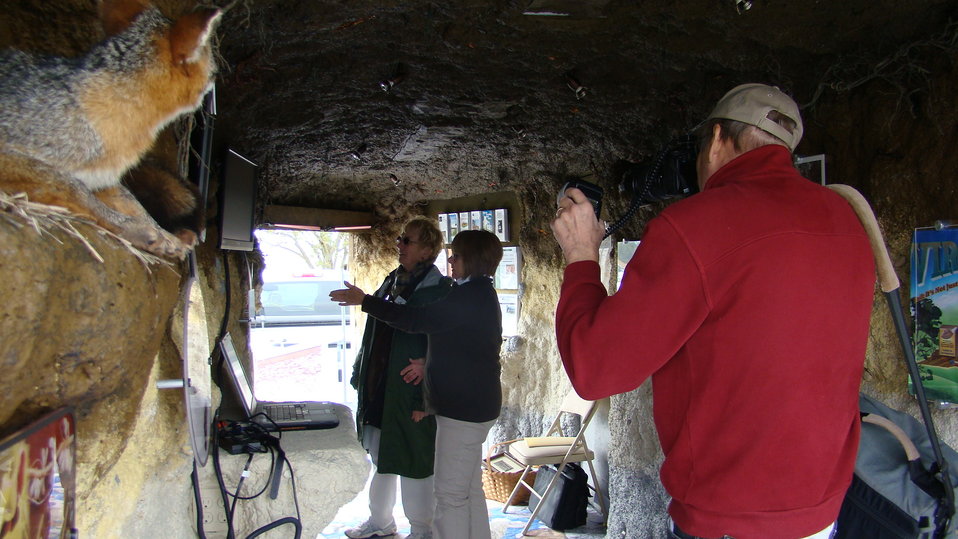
Rappahannock River Valley NWR 15th Anniversary

USDA Soil and Water Conservation District underground immersion experience exhibit.